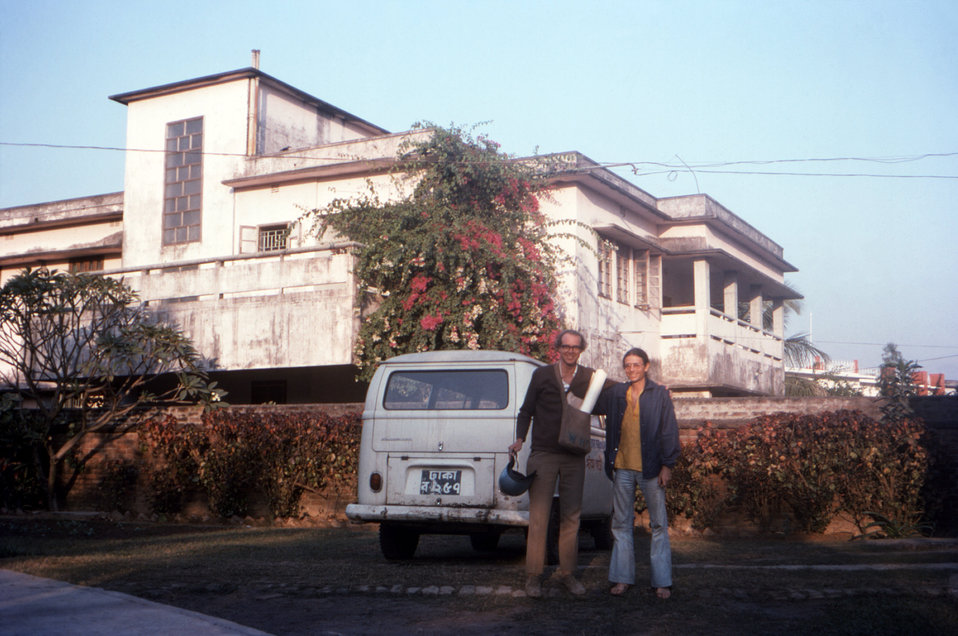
Standing in the yard of the World Health Organization (WHO) Residence located in Dhaka, Bangladesh, were two members of the smallpox eradication team, David Fletcher (at left), from the United Kingdom, and Dr. Michael Schwartz, from the United States.